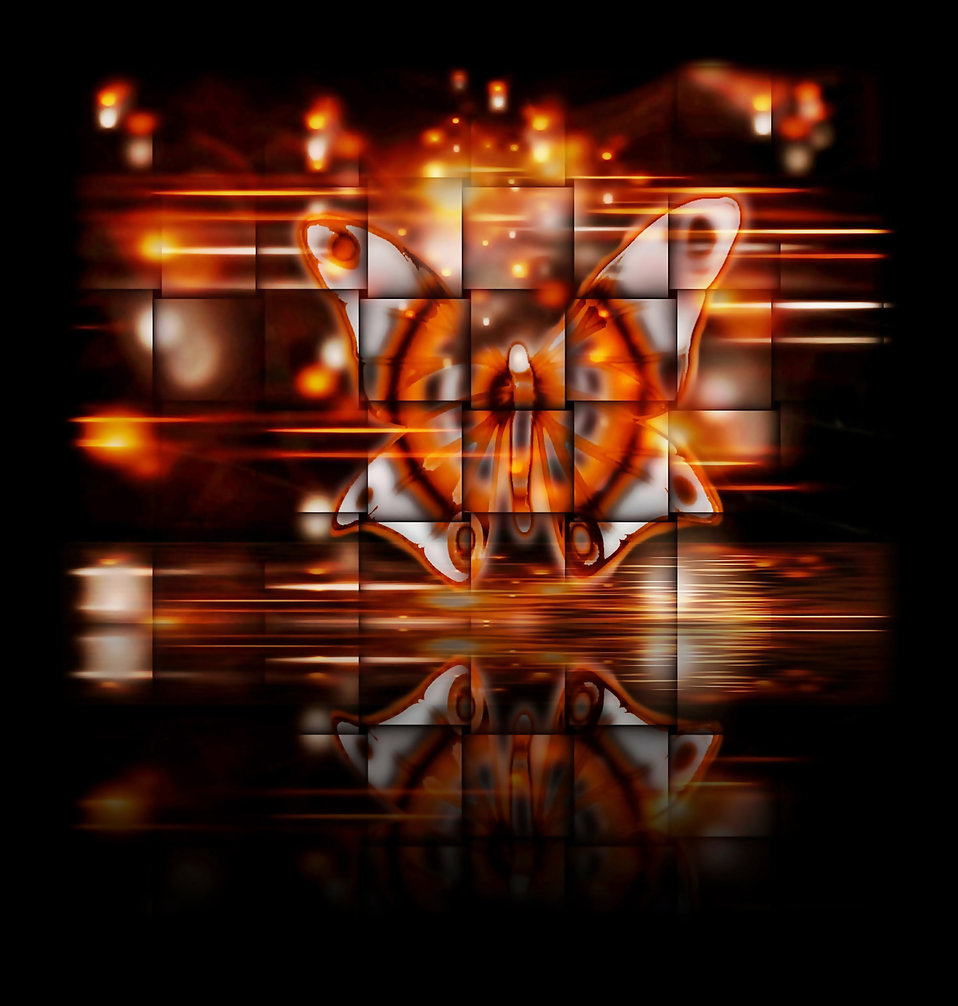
Butterfly in the night

Background.